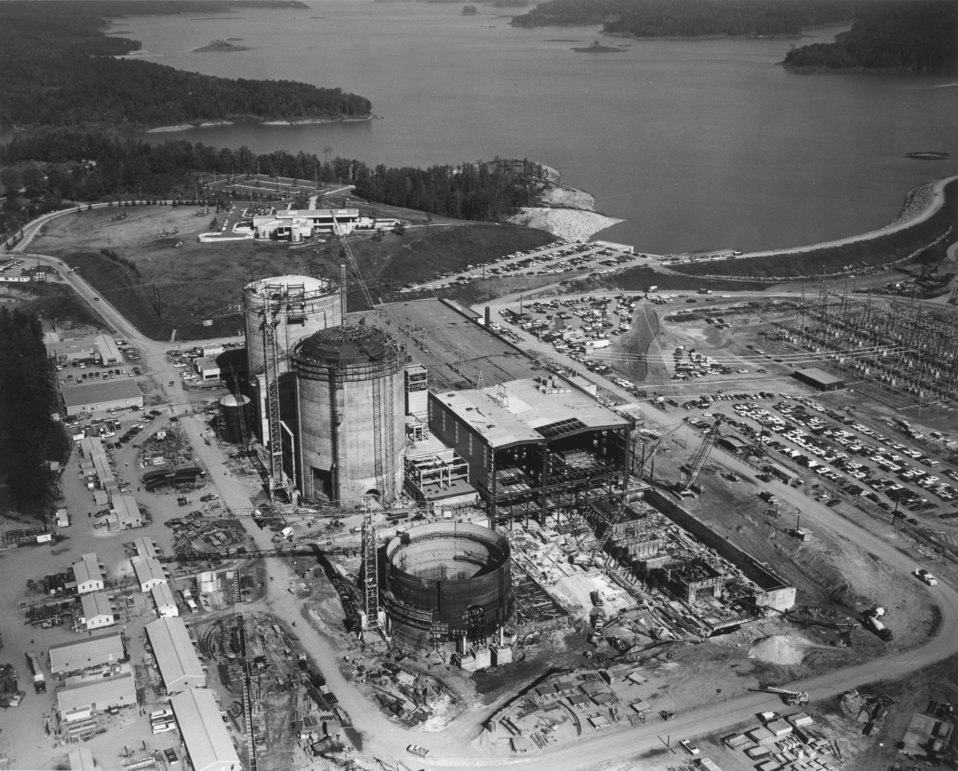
Aerial photo of Duke Power Company's Oconee, S.C., nuclear power station (taken November 4, 1970) shows unit 1, at left, scheduled for commercial operation this summer.